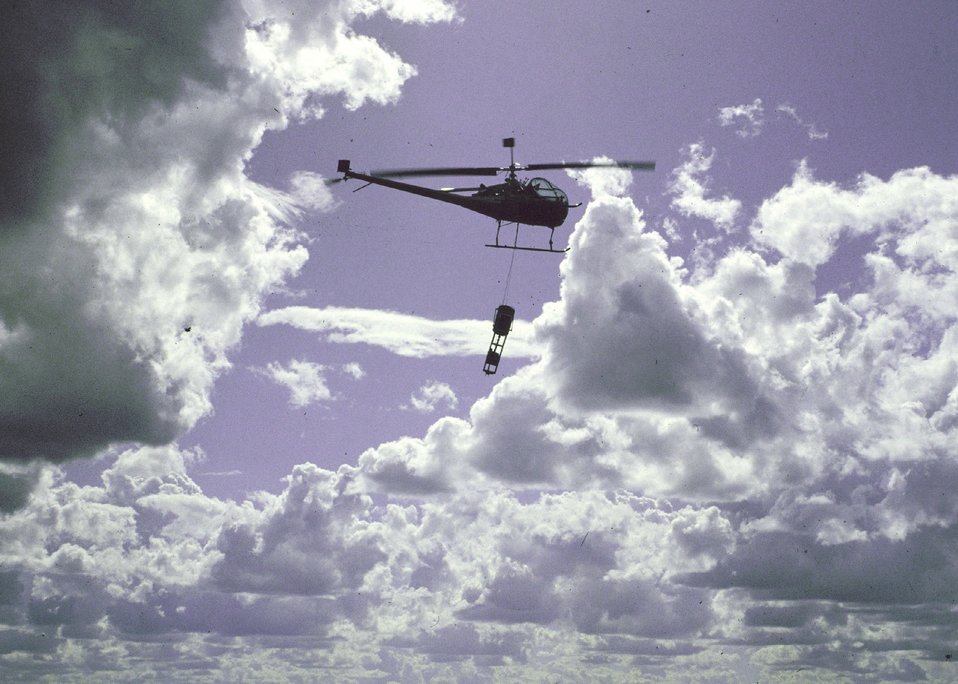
Helicopter with helitorch attached for prescribed burning.